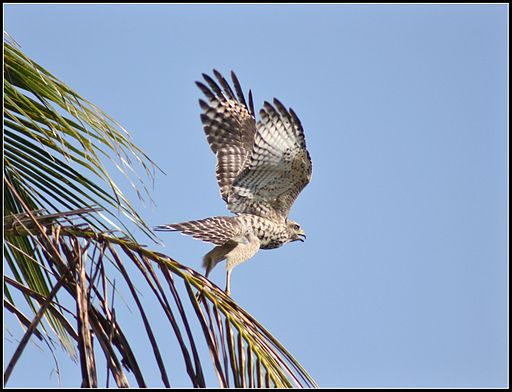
Sharp-shinned hawk